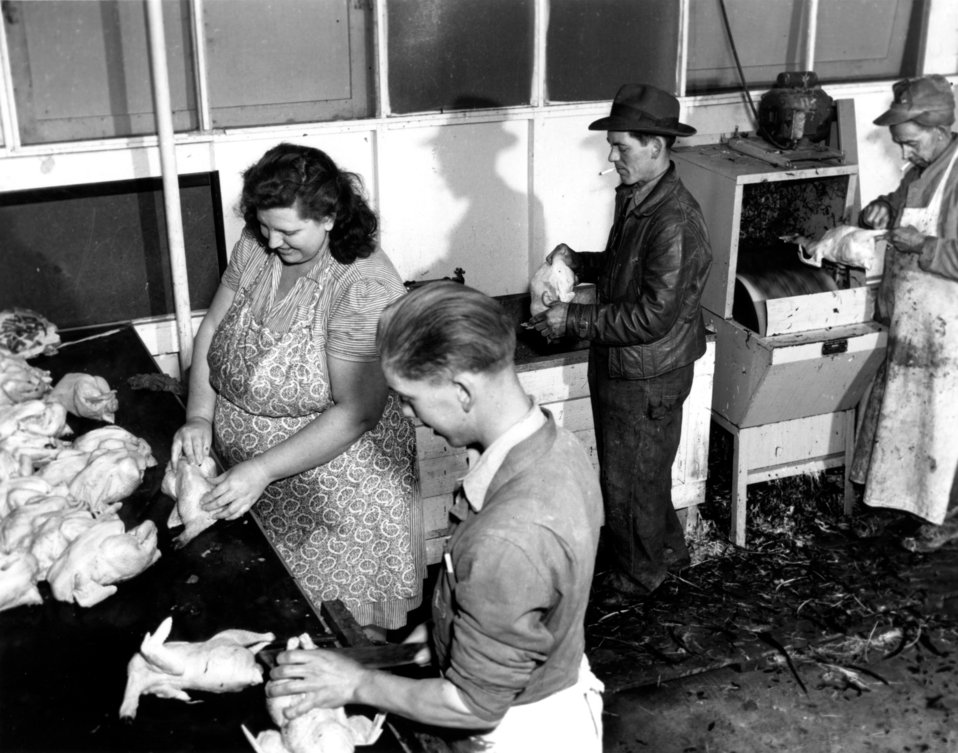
Business activity at Oak Ridge